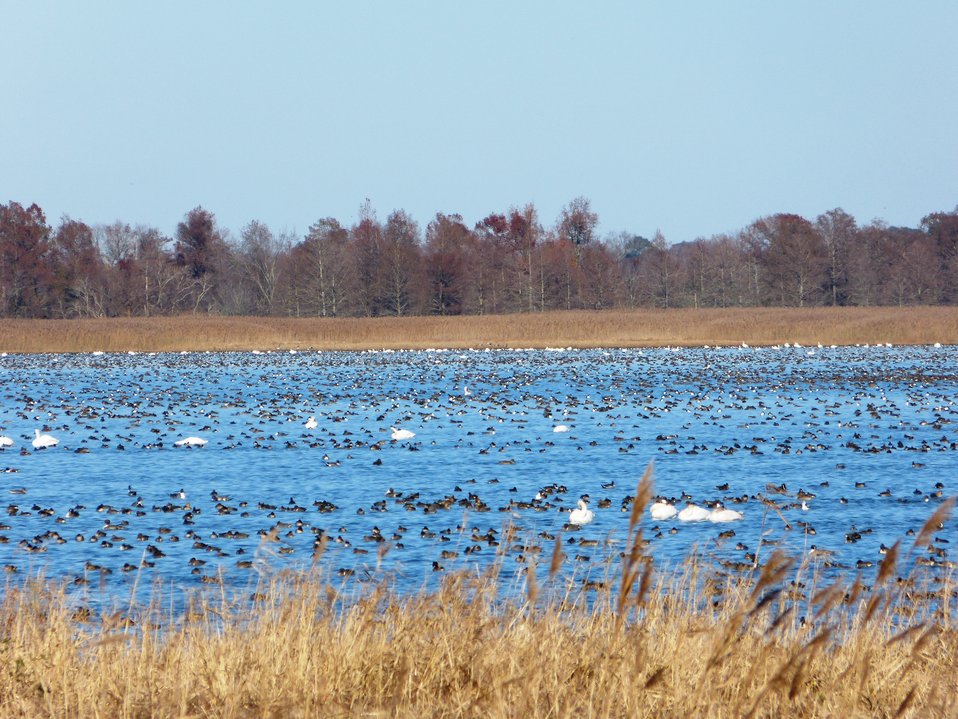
Birds, birds, birds on the lake

At Mattamuskeet National Wildlife Refuge in North Carolina. The Refuge’s prime location along the Atlantic Flyway makes it a vitally important stopover for wintering waterfowl.

In total, the Refuge attracts more than 200,000 ducks, geese and swans from November through February.